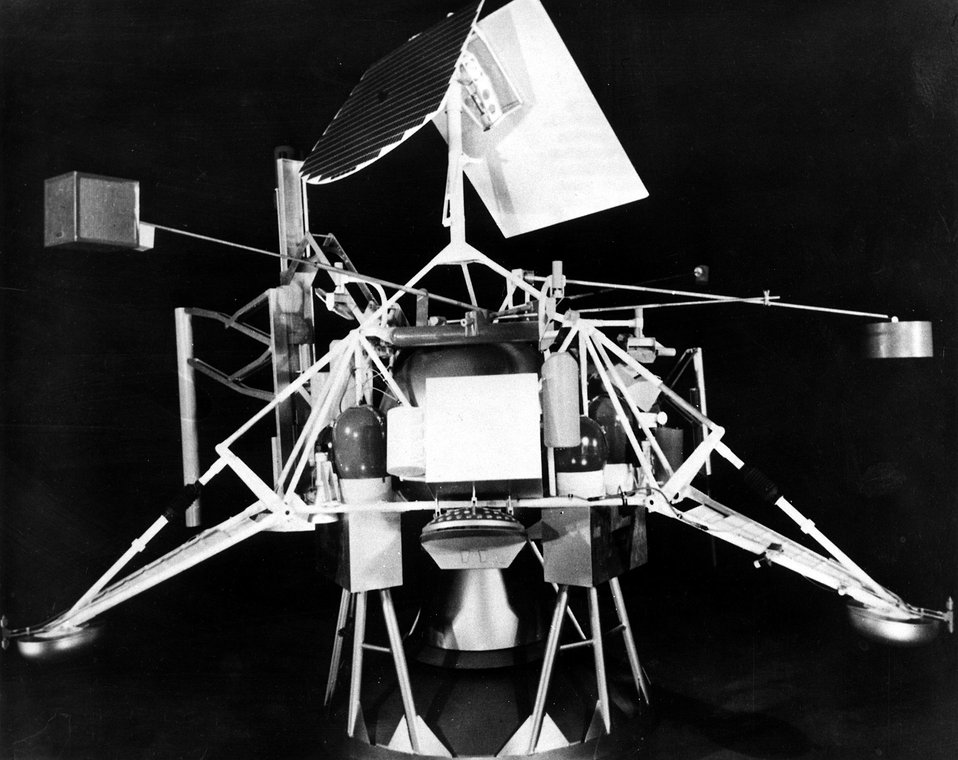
Artist's concept of a Surveyor satellite. The Atomic Energy Commission is developing an isotopic power source, designated SNAP-11, for use in the Surveyor series.